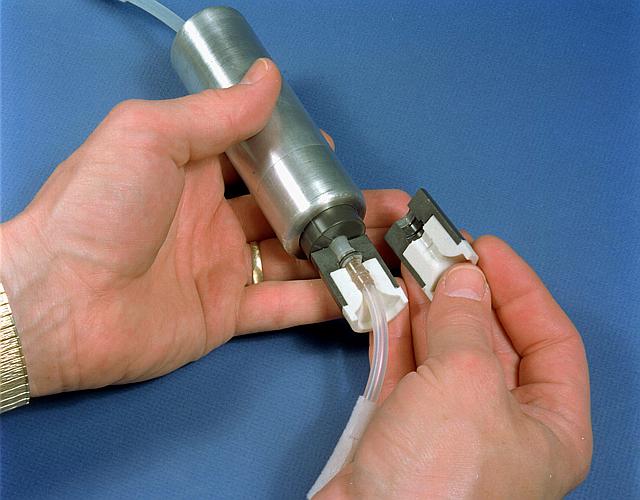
Scientists at Pacific Northwest National Laboratory have developed an innovative portable blood irradiator that provides mobile, extra-corporeal irradiation of blood in vivo. The blood irradiator uses thulium and vitreous carbon to destroy circulating lymphocytes, nearly colorless cells that function in the development of immunity.